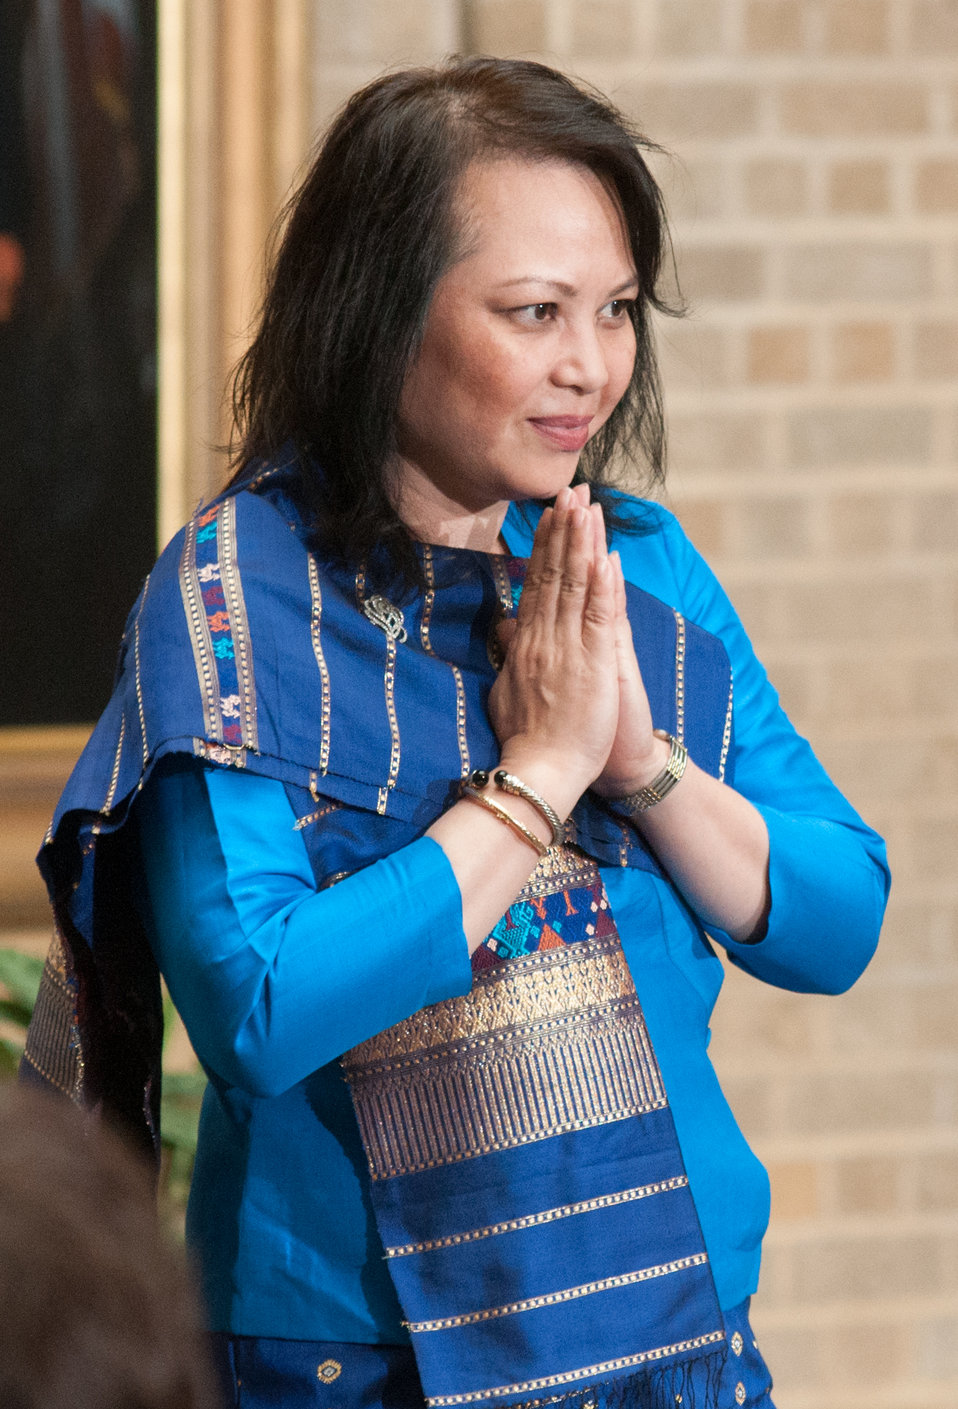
Traditional clothing from various Asian countries were demonstrated during this show of clothing, part of the U.S. Department of Agriculture (USDA) Asian Pacific American Heritage Month Observance program, at the USDA headquarters, Whitten Building patio, in Washington, D.C., on Thursday, May 23, 2013. This year’s theme is “Building leadership; Embracing the Cultural Values and Inclusions.”